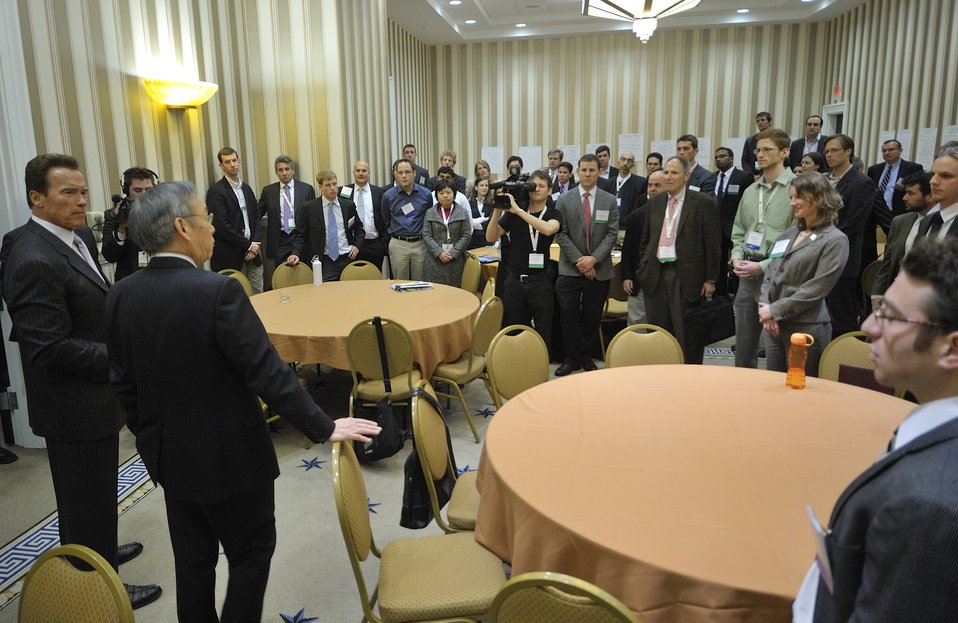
ARPA-E Energy Innovation Summit 2011, 9 of 83

Steven Chu, Secretary, United States Department of Energy and Arnold Schwarzenegger, Former Governor of California surprise graduate students who traveled to the summit.